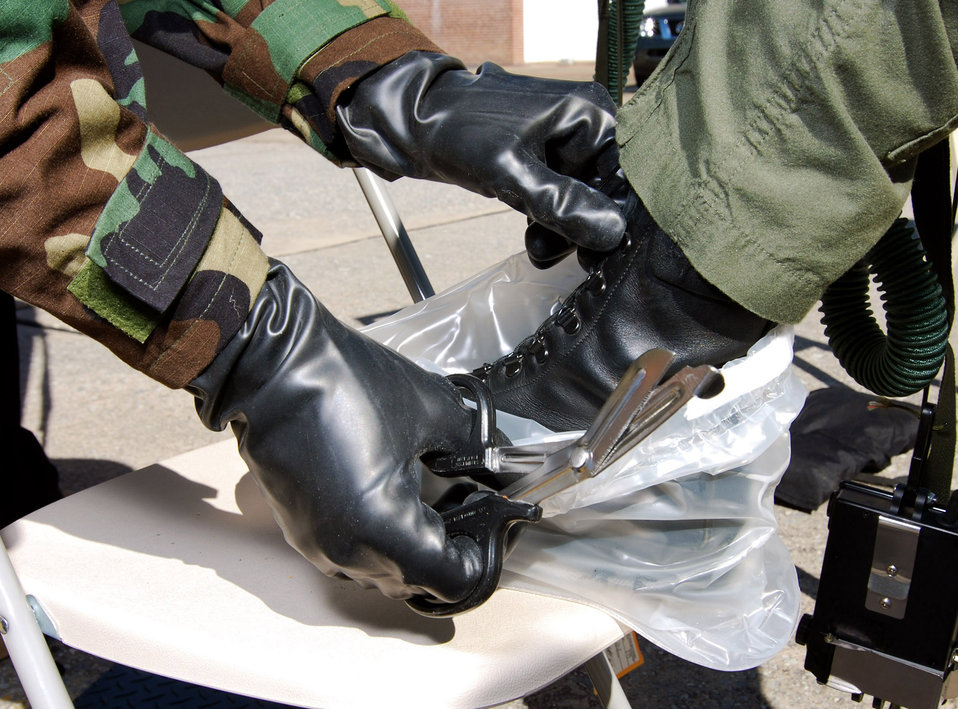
Aircrew Decontamination Training

An aircrew flight equipment technician works to remove the plastic covering and boots from a 700th Airlift Squadron pilot during decontamination training Feb. 6, 2011, at Dobbins Air Reserve Base, Ga.